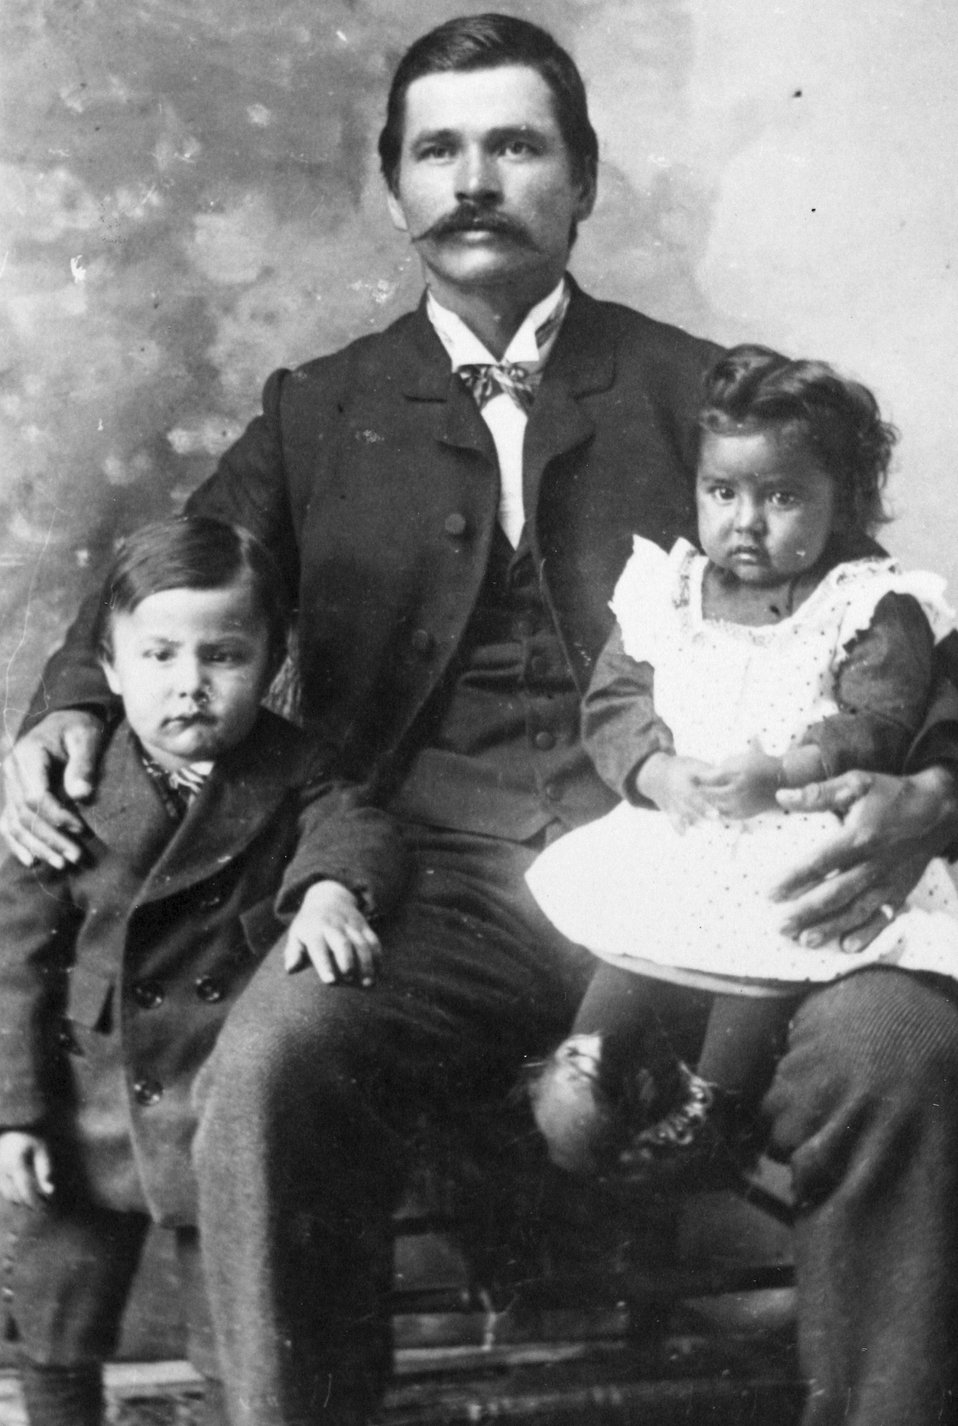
Antone Walker with Dean and Ann Walker. C. 1893